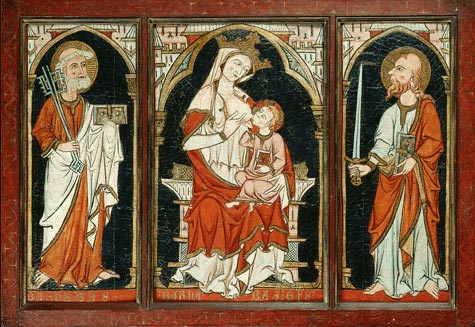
'The Barnabas Altarpiece', southwestern French or northern Spanish, c. 1275–1350, tempera, oil, and gold on panel, Kimbell Art Museum